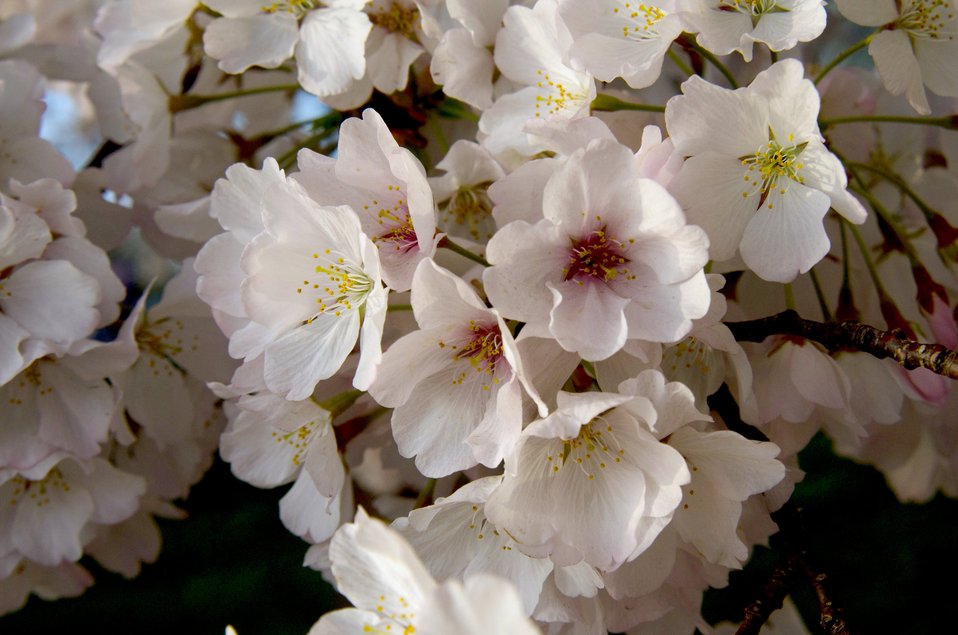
Cherry blossoms at the Tidal Basin in Washington, D.C., on Tuesday, March 20, 2012.